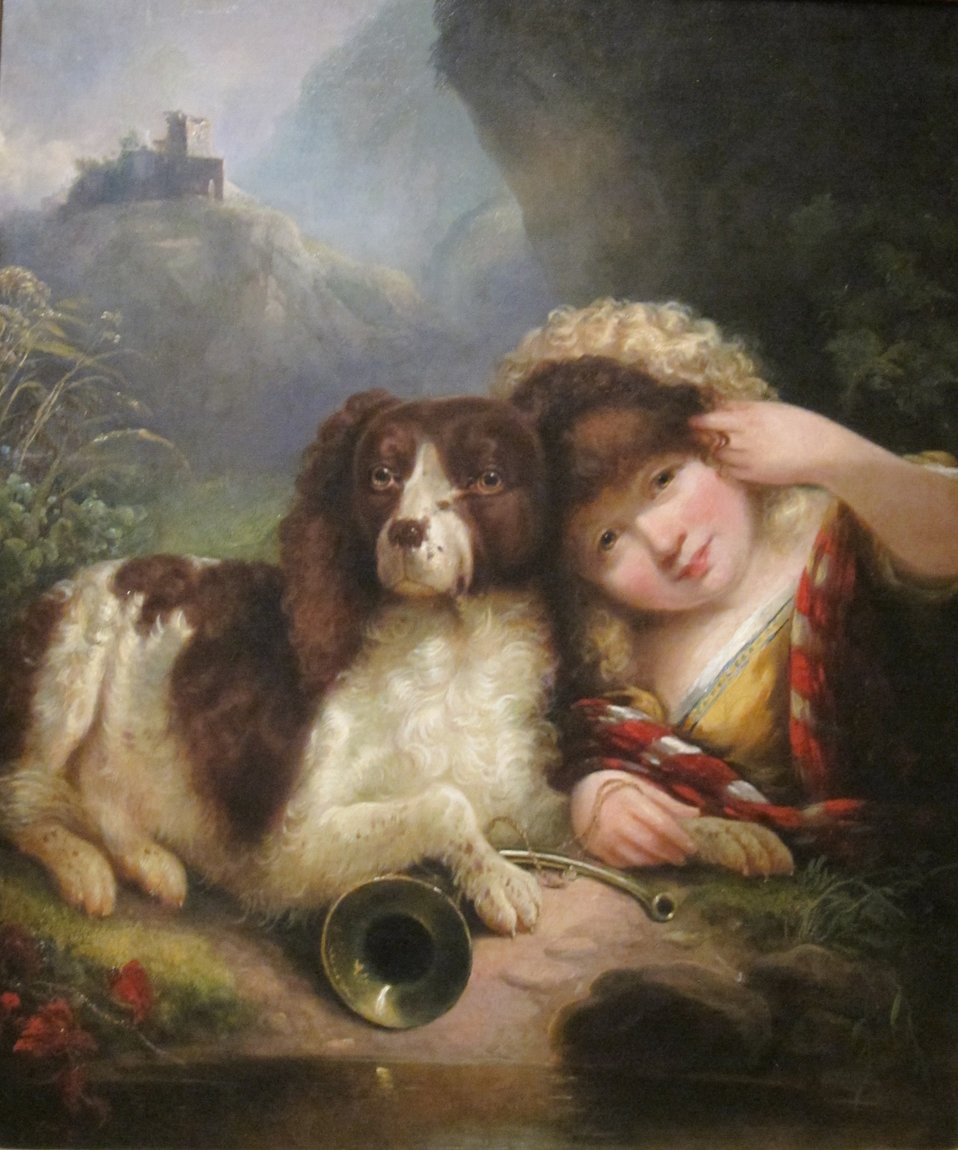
'Little Bo-Peep' by Alvan Fisher, Cincinnati Art Museum